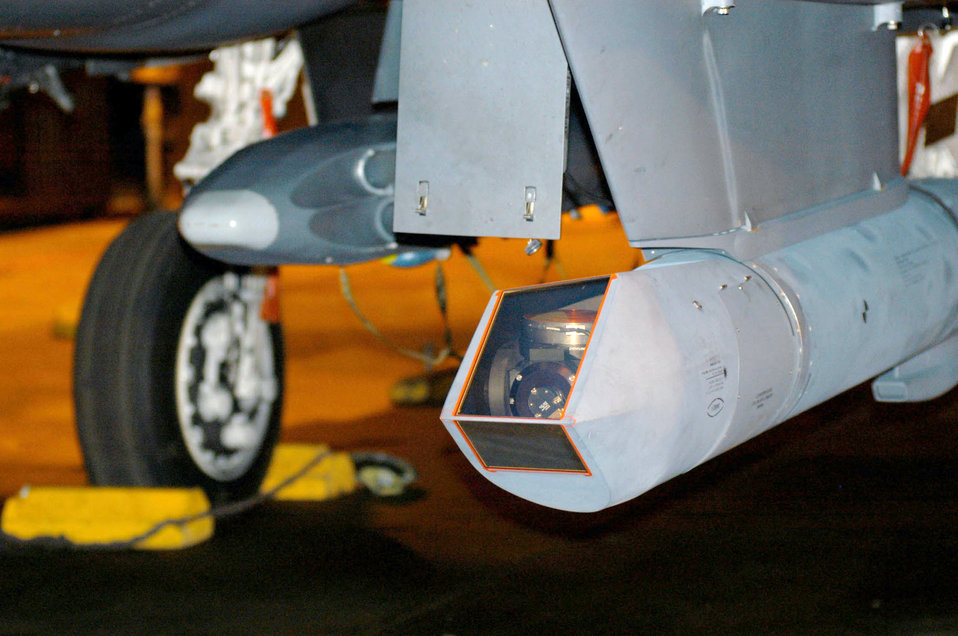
F-15E crew uses new targeting pod

ROYAL AIR FORCE LAKENHEATH, England -- The Sniper Advanced Targeting Pod made its operational debut Jan. 7 on an F-15E Strike Eagle assigned to the 494th Fighter Squadron here. At high altitudes, with the third-generation pod, the weapons system officer is able to distinguish different pickup truck models on the ground.